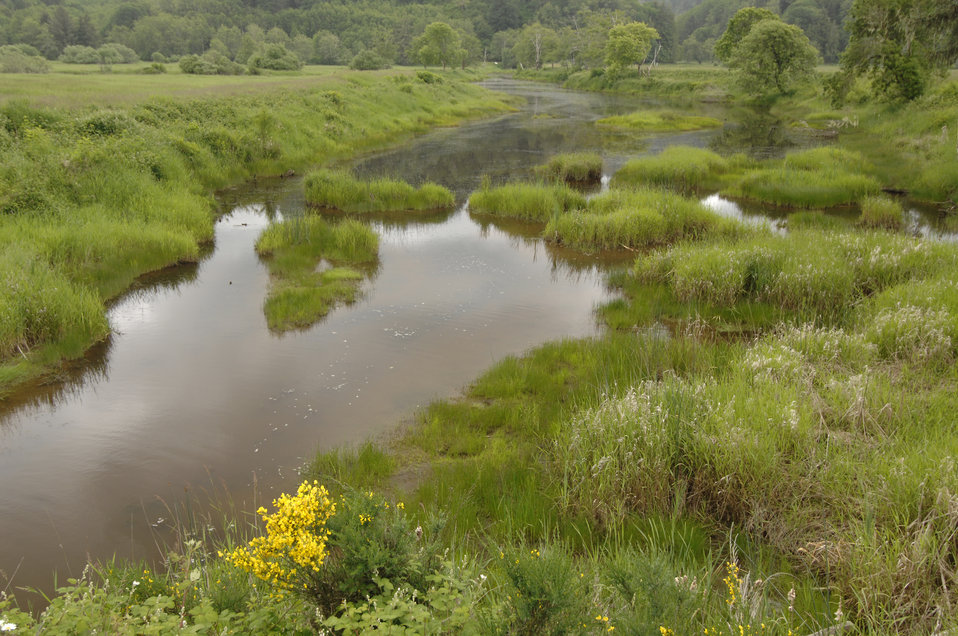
Scotch Broom is an invasive flowering shrub with yellow flowers growing in Umpqua National Forest in Oregon on June 10, 2008. This plant was introduced from Europe as an ornamental and for erosion control and it is highly aggressive and forms dense, monotypic stands, which reduce wildlife habitat and hinder revegetation of upland sites and wetland buffers. A species is considered invasive it is nonnative to the ecosystem and its introduction causes or is likely to cause economic or environmental harm or harm to human health. The goal of the U.S. Department of Agriculture’s (USDA) Forest Service (FS) invasive species program is to reduce, minimize, or eliminate the potential for introduction, establishment, spread, and impact of invasive species across all landscapes and ownerships.